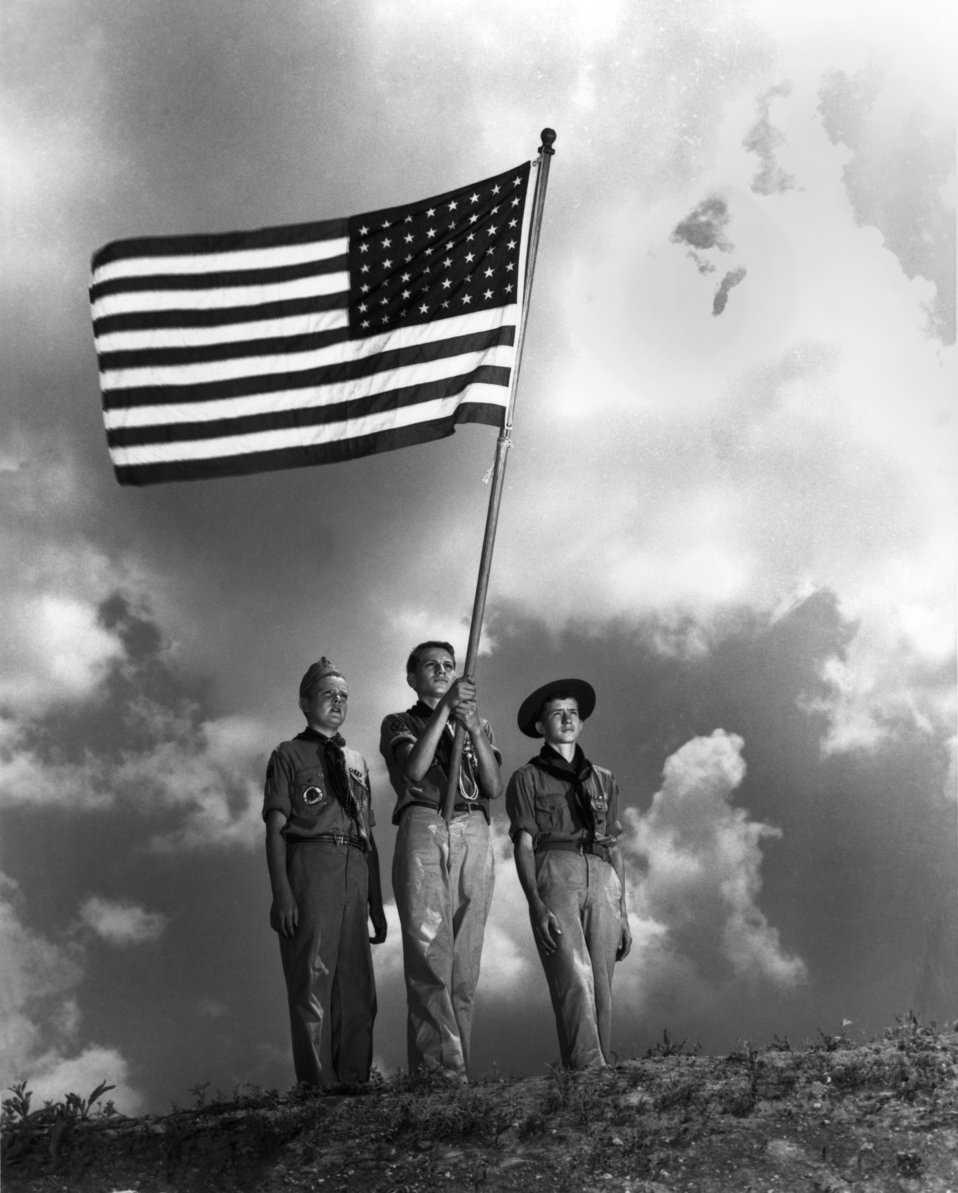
Boy Scouts in Oak Ridge

1800 DOE photo by Ed Westcott

Boy Scouts in Oak Ridge Tennessee
6/26/1946